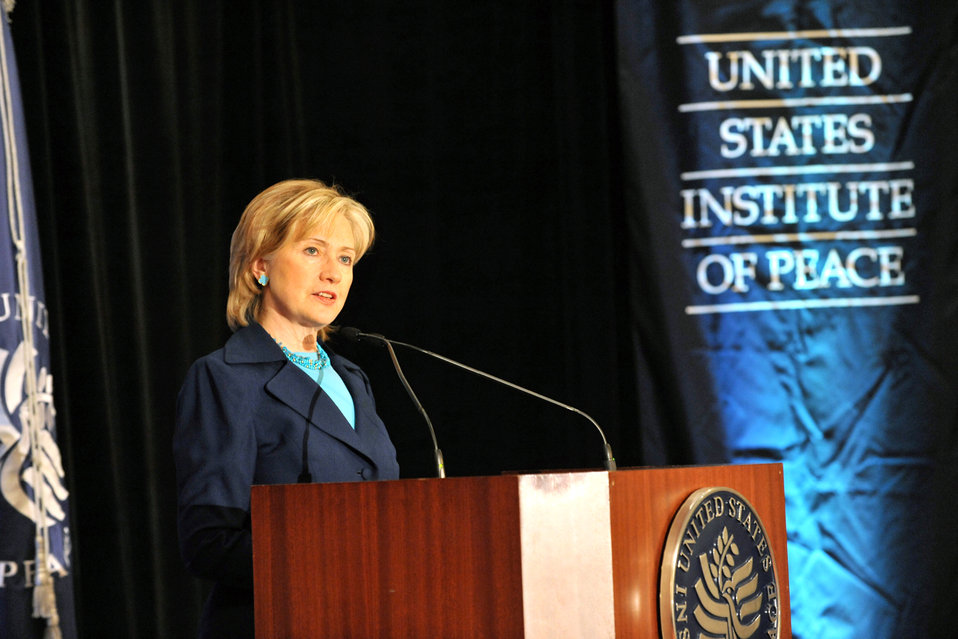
Secretary Clinton Remarks on Nonproliferation

U.S. Secretary of State Hillary Rodham Clinton provides remarks on Nonproliferation at the Renaissance Mayflower Hotel in Washington, DC October 21, 2009.